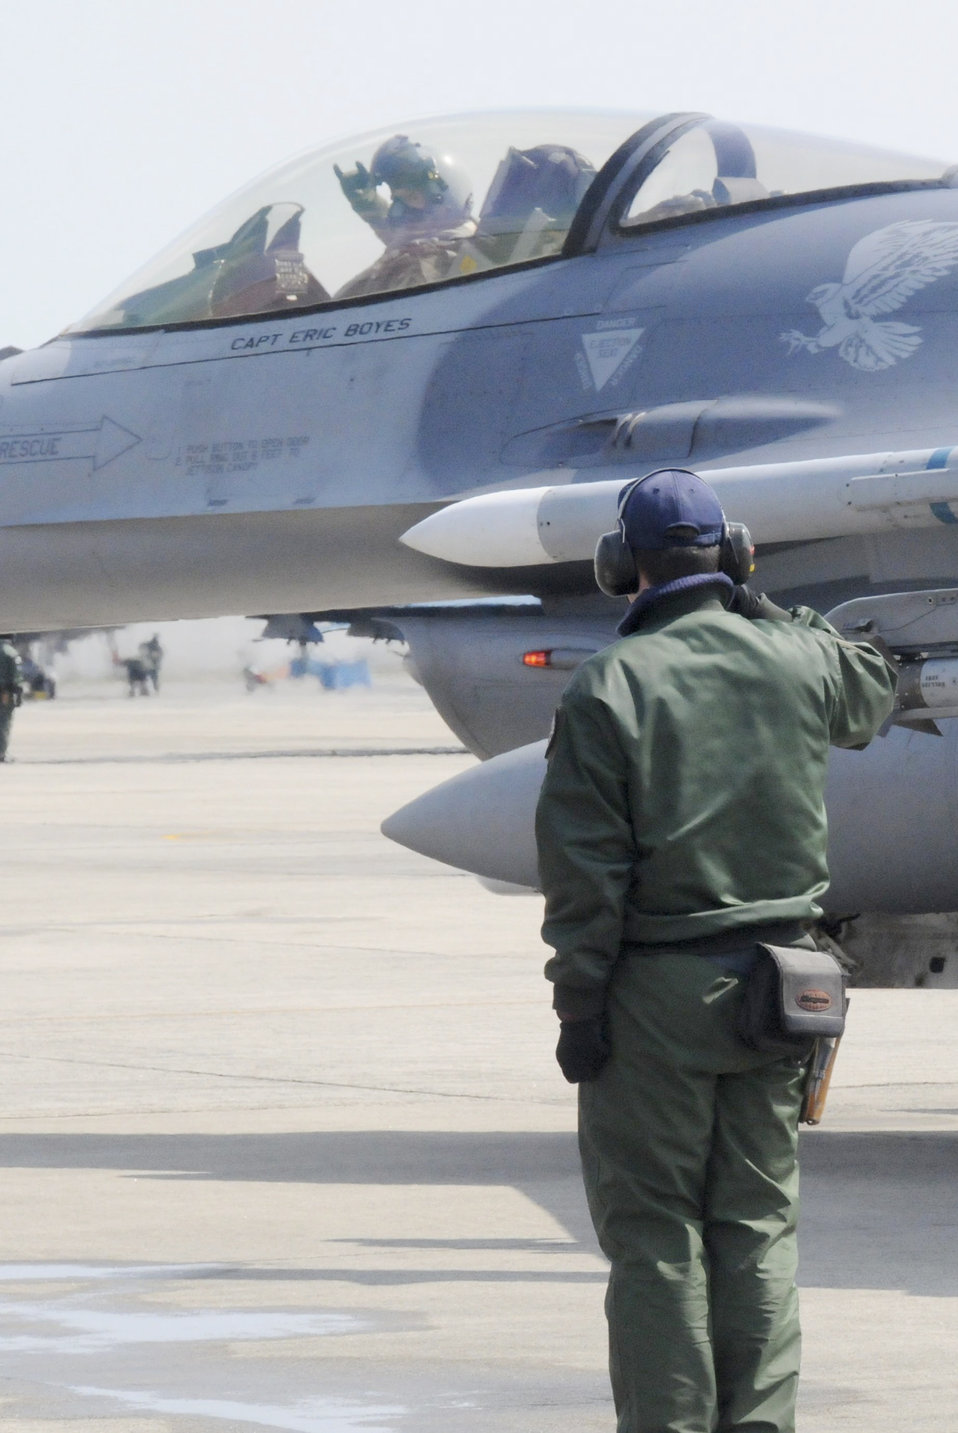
ATR exercise concludes

Japan Air Self-Defense Force Staff Sgt. Yuuta Isoya, an F-15 crewchief, salutes Capt. Matt Kenkel, 14th Fighter Squadron pilot, as he taxis out during an aviation training relocation exercise March 11, 2010, at Tsuiki Air Base, Japan.